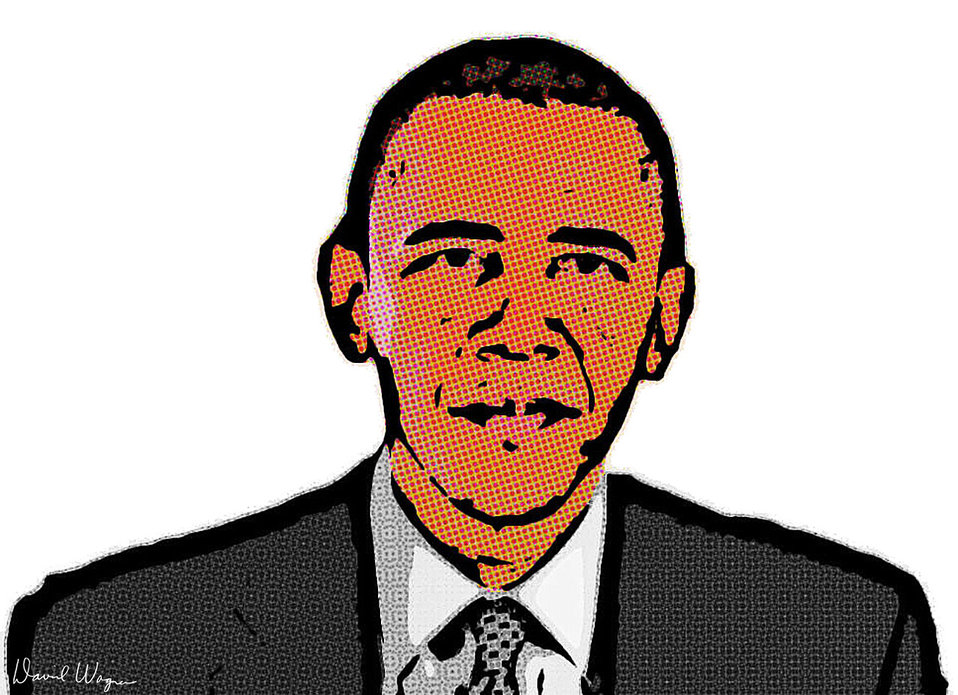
Barack obama 32

United states president barack obama.